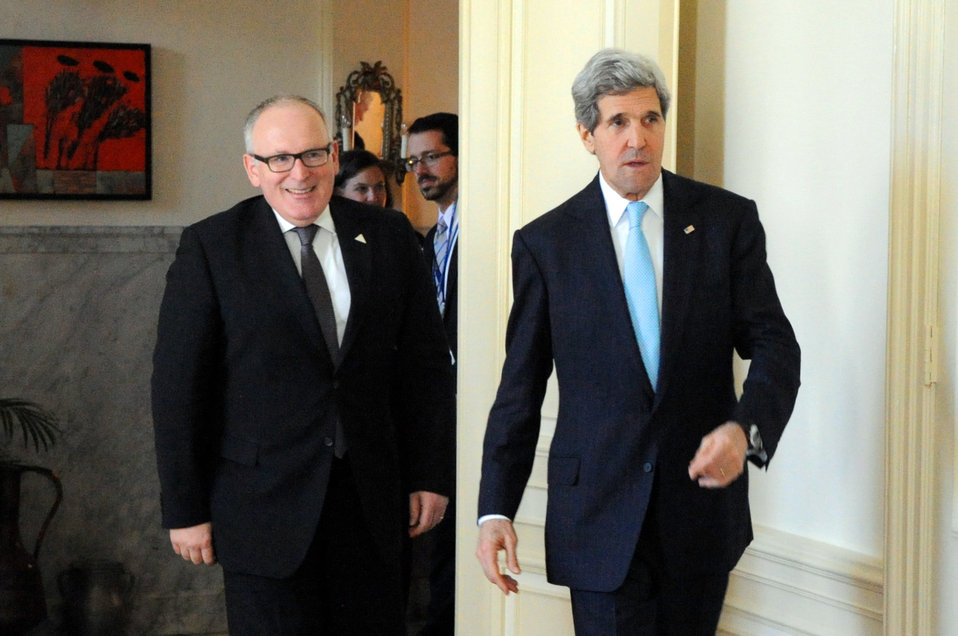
Secretary Kerry Escorts Dutch Foreign Minister Timmermans in The Hague

U.S. Secretary of State John Kerry escorts Foreign Minister Frans Timmermans of the Netherlands before a bilateral meeting on the margins of the National Security Summit in The Hague on March 24, 2014.